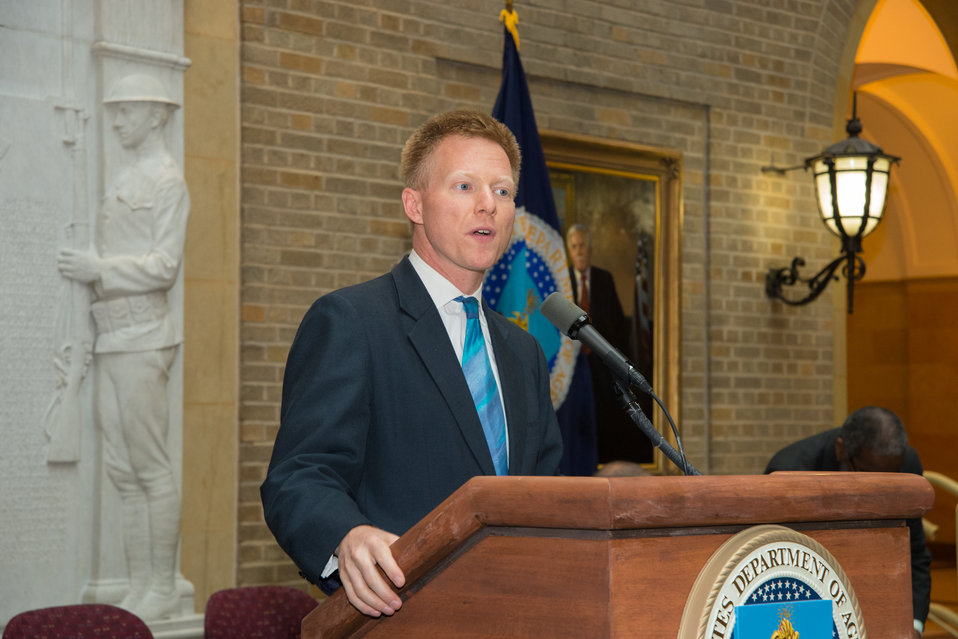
U.S. Department of Agriculture (USDA) Strike Force National Coordinator Max Finberg welcomes employees, family and friends to USDA’s Unsung Hero Awards at USDA in Washington, D.C. on Wednesday, May 7, 2014. USDA’s Organization of Professional Employees (OPEDA) in cooperation with USDA Departmental Management (DM) presented the “Unsung Hero Awards” to USDA employees who have demonstrated extraordinary effort in performing tasks, who have unselfishly shared time and expertise, and consistently and willingly extended a helping hand. They were also recognized for their contributions to transforming the culture of USDA.